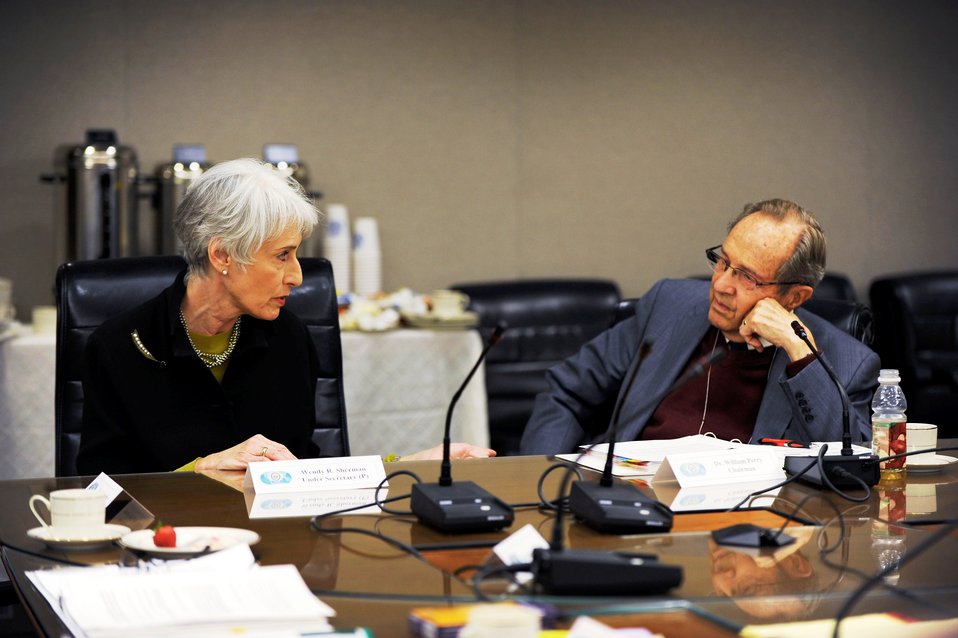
Under Secretary Sherman Meets With ISAB Members

Under Secretary of State for Political Affairs Wendy Sherman meets with members of the International Security Advisory Board (ISAB), chaired by former Secretary of Defense William Perry, at the U.S. Department of State in Washington, D.C., September 13, 2012.